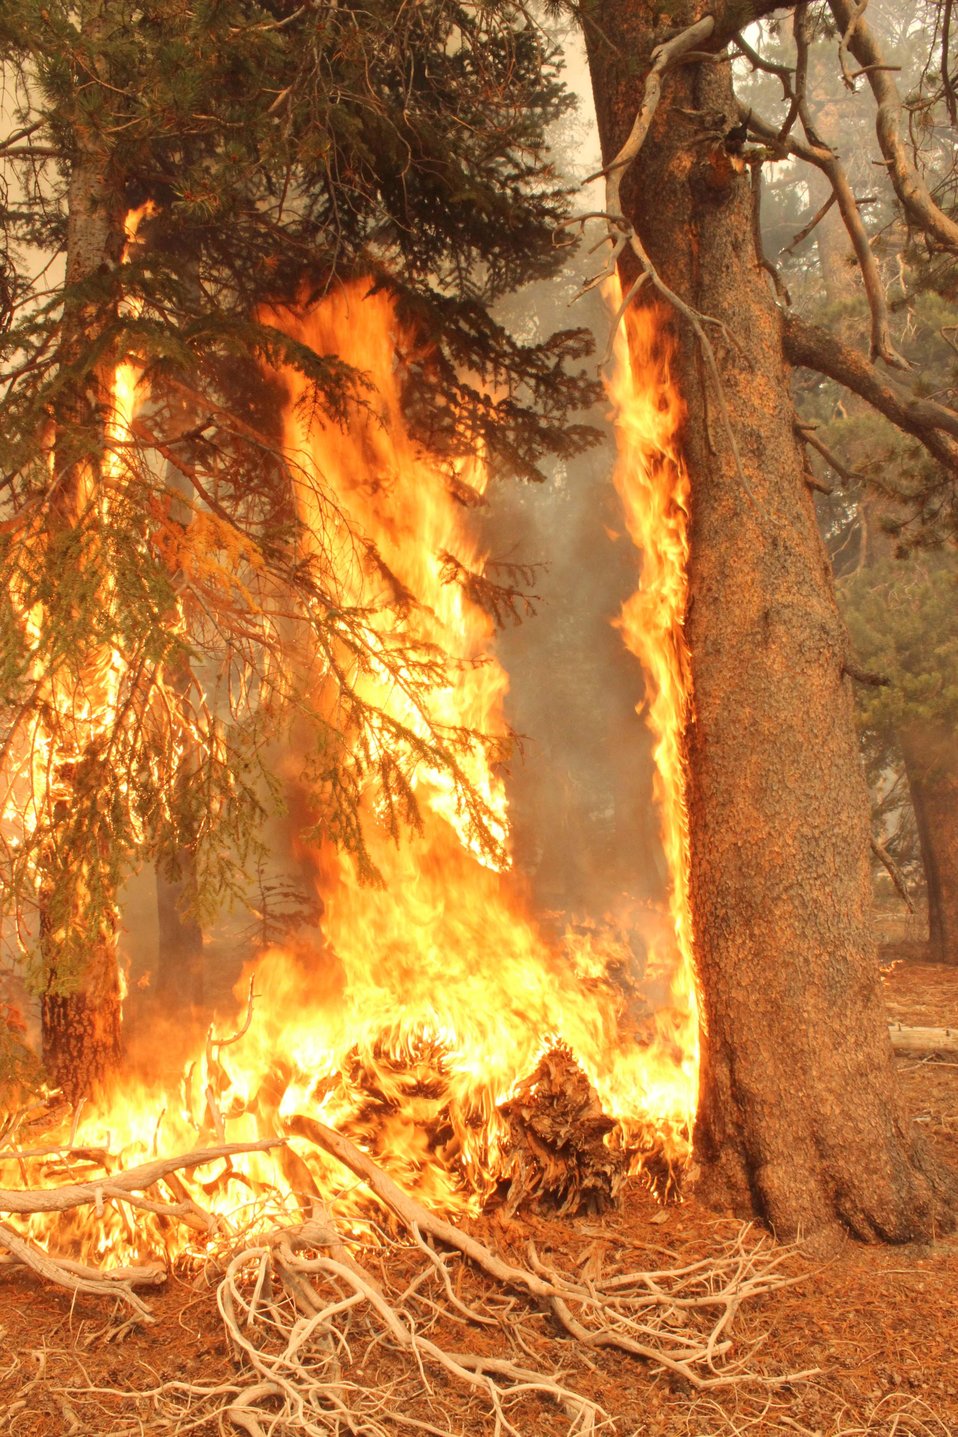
The Rim Fire in the Stanislaus National Forest near in California began on Aug. 17, 2013 and is under investigation. The fire has consumed approximately 256,169 acres and is 84% contained.